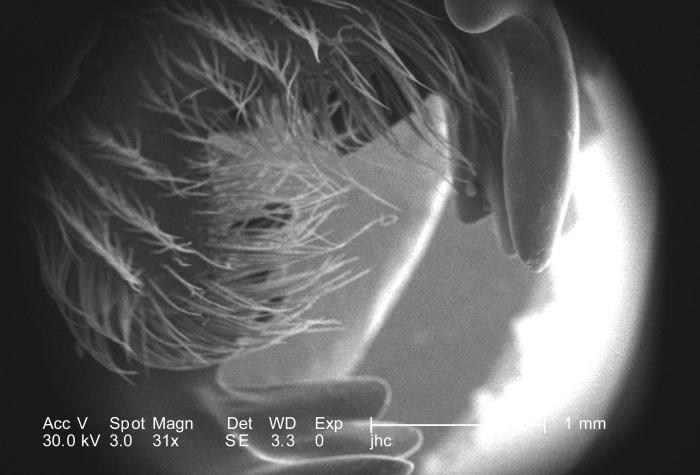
Under a low magnification of 31X, this scanning electron micrograph (SEM) depicted some of the exoskeletal morphologic characteristics displayed on the head region of an unidentified beetle found deceased in the suburbs of Decatur, Georgia. Included in this view were a number of what appeared to be 'hairs', but were actually sensorial extensions of the insect's exoskeleton known as 'setae'. Also, note the "comb-like" mandibular protuberances used when the beetle grasps its food, or manipulates objects in its environment.